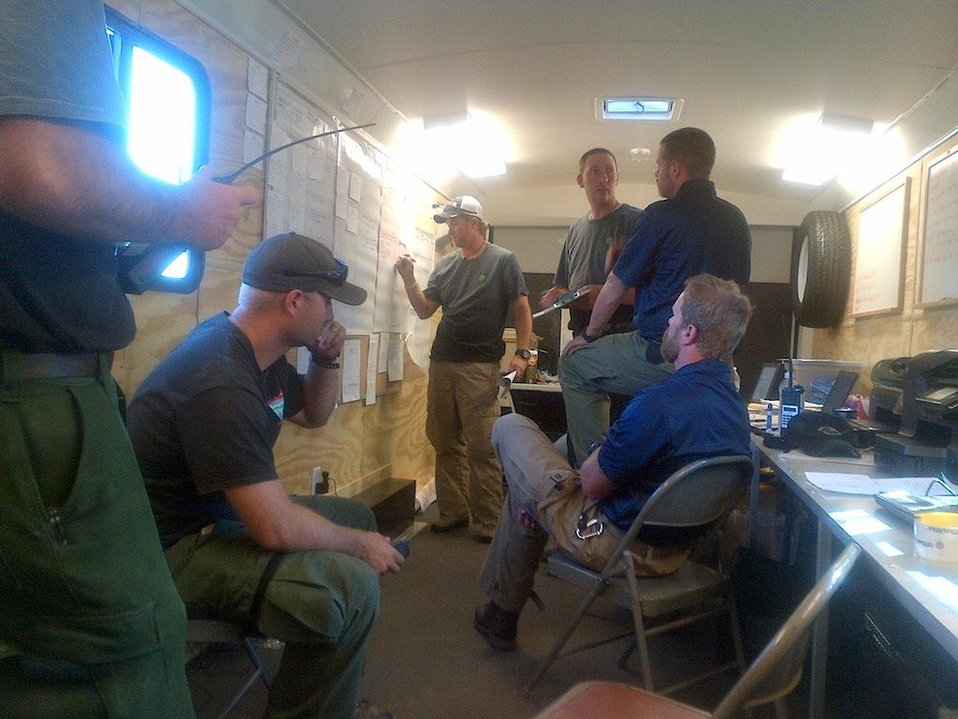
Incident Commander Tyler Hecht's Incident Management Team confers at the Incident Command Post at the Smith Ranch Fire on Jul. 21, 2013. The Smith Ranch Fire located 10 miles northwest of Jiggs, NV began on Jul. 19, 2013 by lightning and has consumed approximately 2,759 acres. The Smith Ranch Fire is 100% contained.